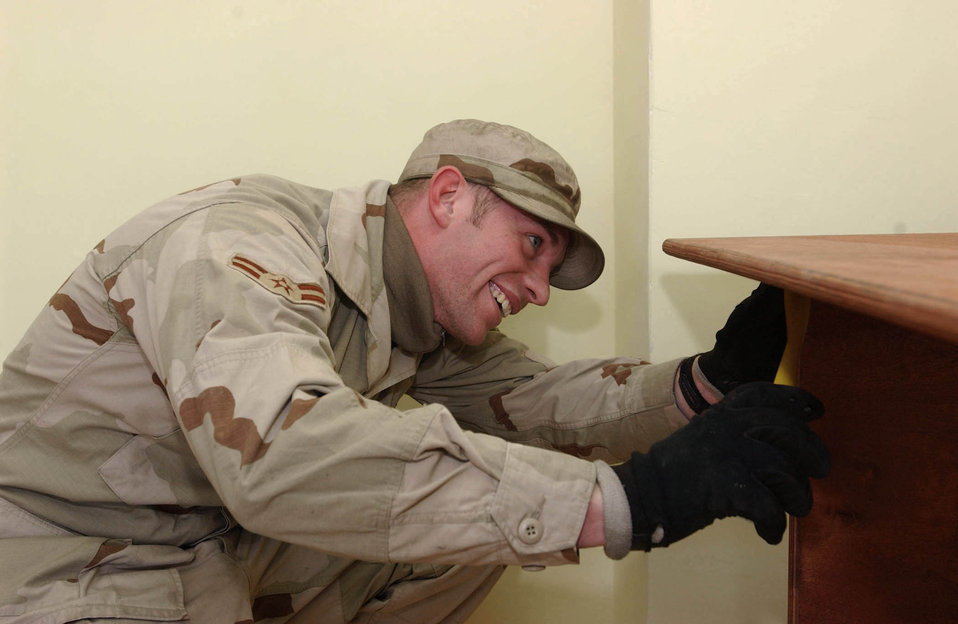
Back to school

OPERATION ENDURING FREEDOM (AFPN) -- Airman 1st Class Bradley Hunter adjusts the edge of a desk for a computer room at a local school. He is assigned to the 376th Expeditionary Civil Engineer Squadron at Ganci Air Base, Kyrgyzstan. Airmen and local contractors are working together to refurbish the school in nearby Marble Village.